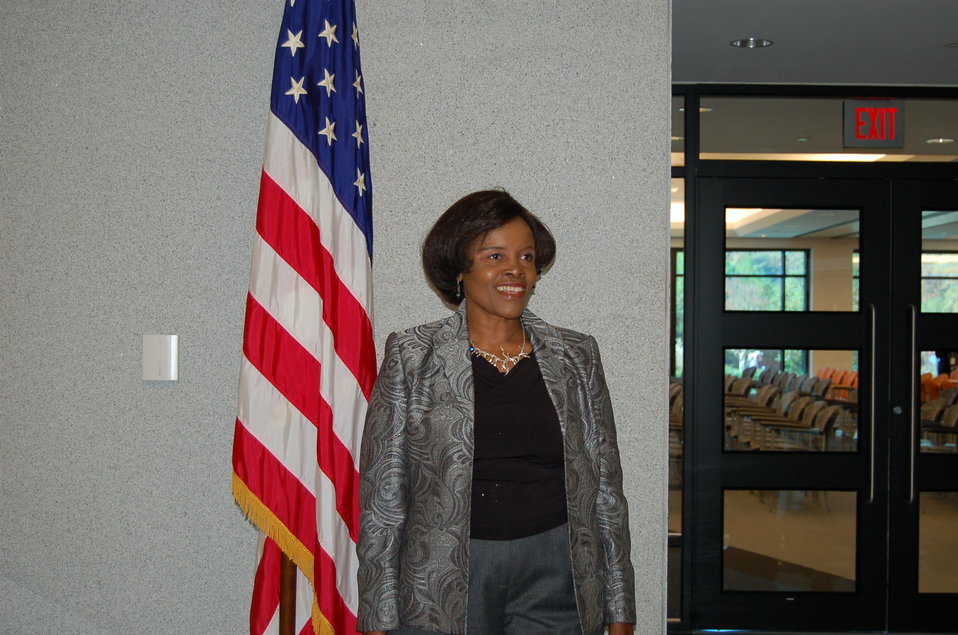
New Citizens